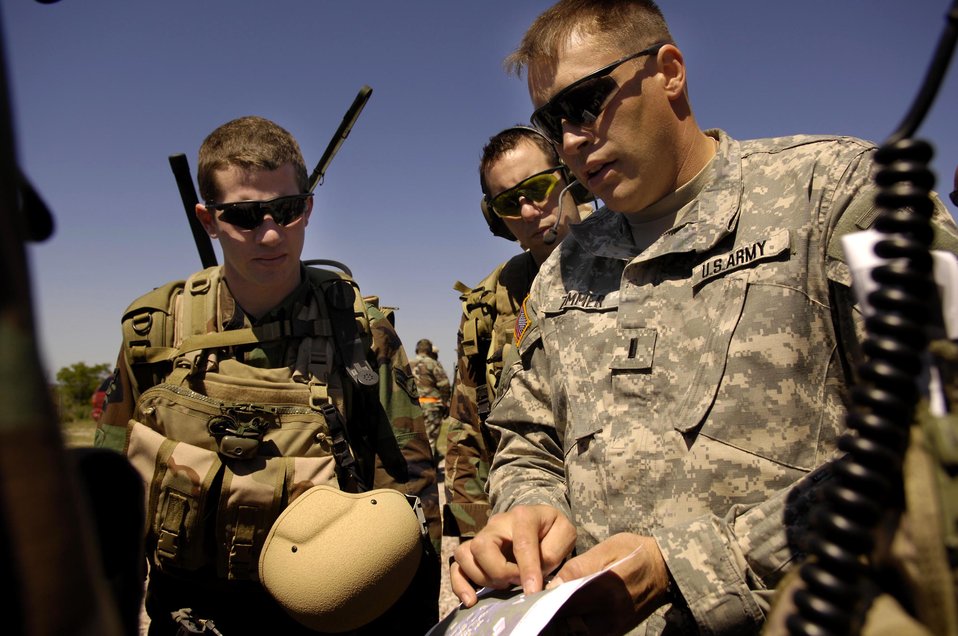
Atlantic Strike V begins in Avon Park

Air Force joint terminal attack controllers receive an intelligence brief from 1st Lt. Daniel Zimmer of the Army's 4th Infantry Division from Fort Hood, Texas, before participating in Atlantic Strike V April 16 at Avon Park, Fla. Atlantic Strike is a joint forces training event involving joint terminal attack controllers from the Army, Air Force and Marines and is held semi-annually at the Avon Park Air Ground Training Complex.